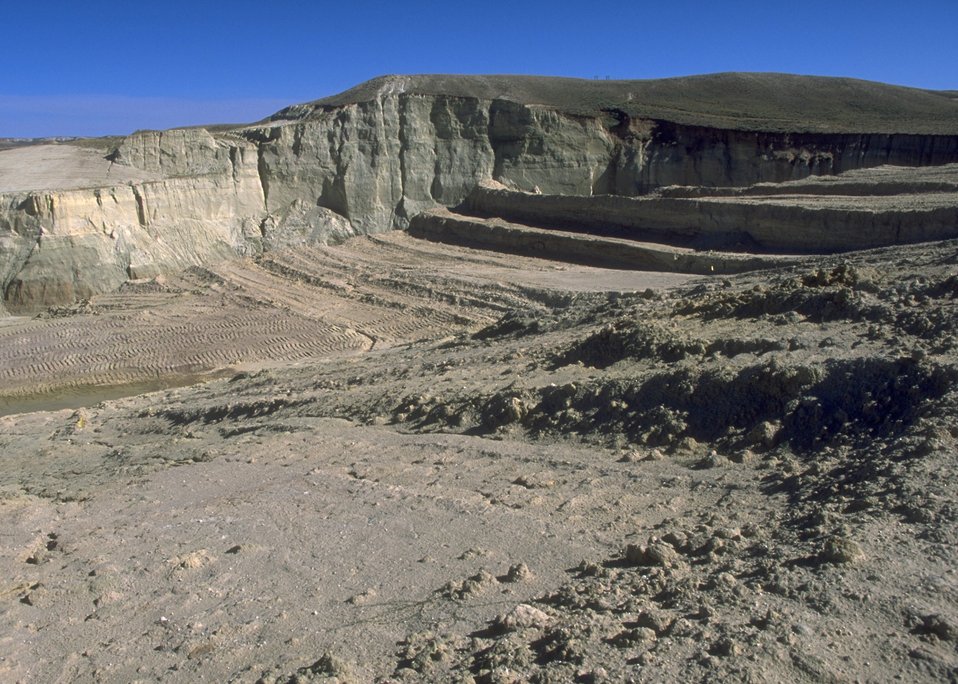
Gas Hill Abandoned Mine Lands in various stages of rehabilitation, Lander Field Office.